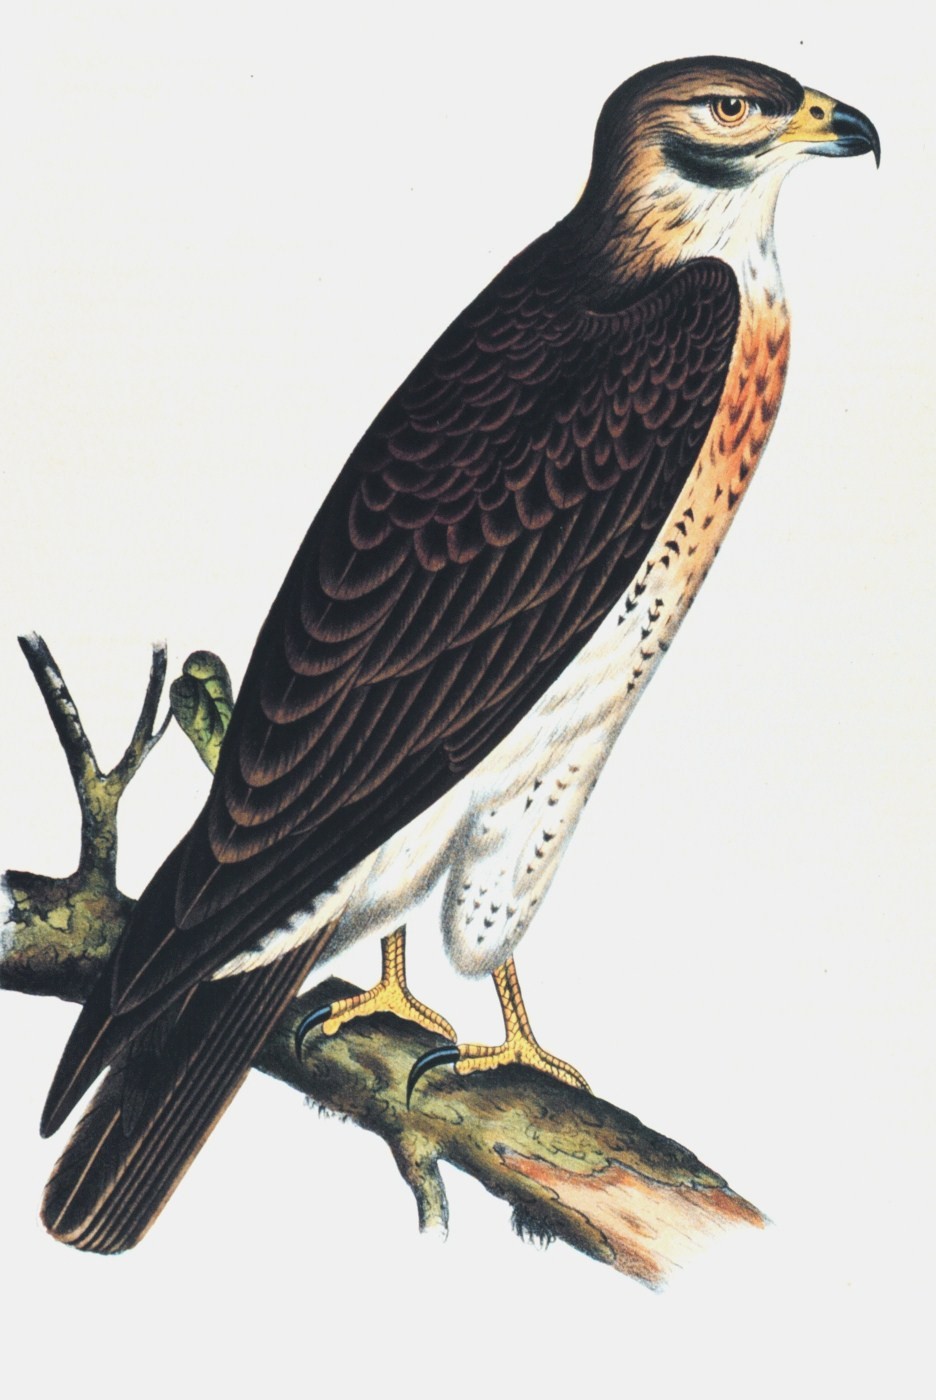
Buteo swainsoni. Swainson's Buzzard, a variety of hawk. This image was included in: Reports of Explorations and Surveys .... Volume X. 1859. Plate XII. P. 16 of U. S. Pacific Railroad Explorations and Surveys 38th,39th, 41st Parallels. Library Call Number F593 .U58 1855.